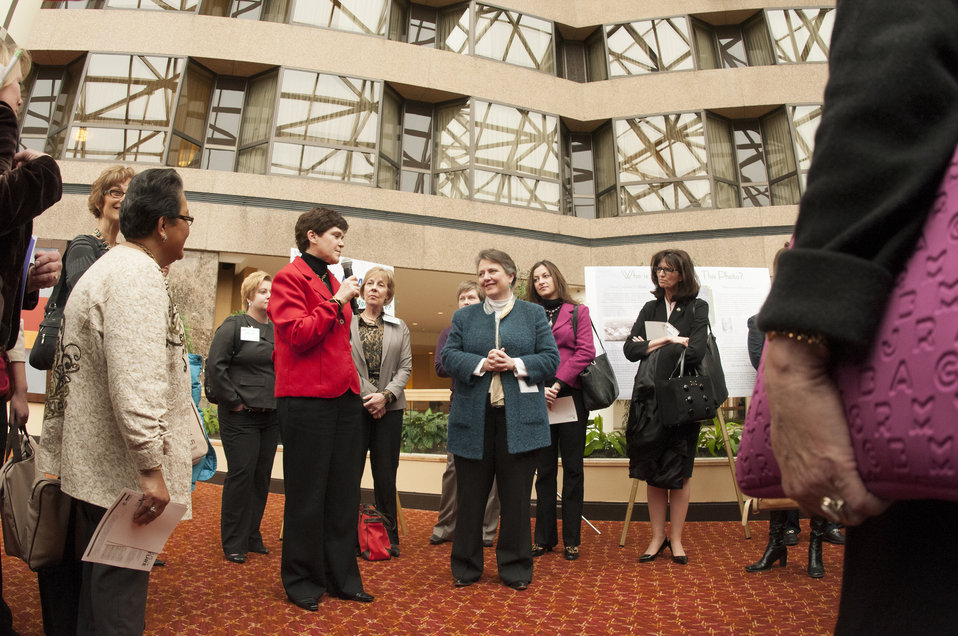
The U.S. Department of Agriculture (USDA) 2013 Agricultural Outlook Forum was held at the Crystal Gateway Marriott Hotel in Arlington, VA on Friday, Feb. 22, 2013. Agriculture Deputy Secretary Kathleen Merrigan and Agriculture Chief of Staff Krysta Harden participated in the Women in Agriculture-Speed Networking Event, which encouraged and promoted the participation of women in American agriculture.